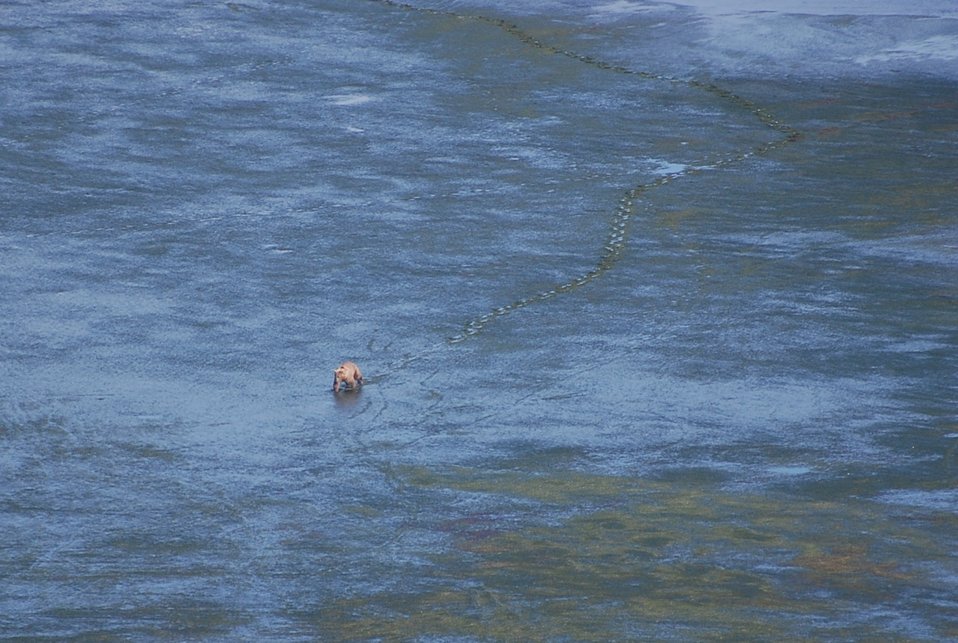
Brown bear in Izembek Lagoon

Walking across eelgrass in Applegate Cove, Izembek National Wildlife Refuge